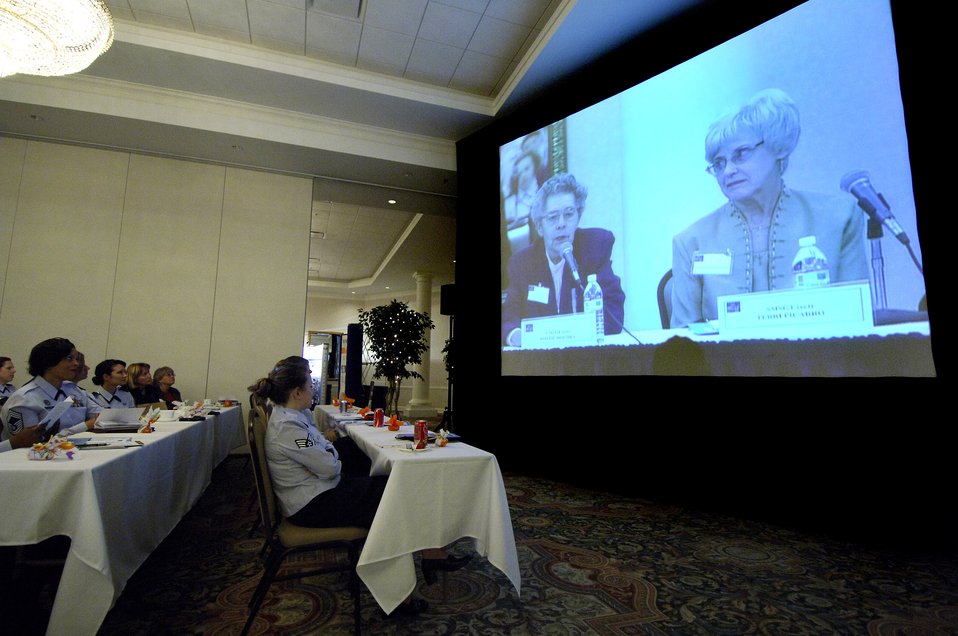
Captial Shield 2008

About 600 women of all ranks are in Springfield, Va., for the 2007 Air Force Heritage to Horizon Women's Training Symposium on Oct. 31.